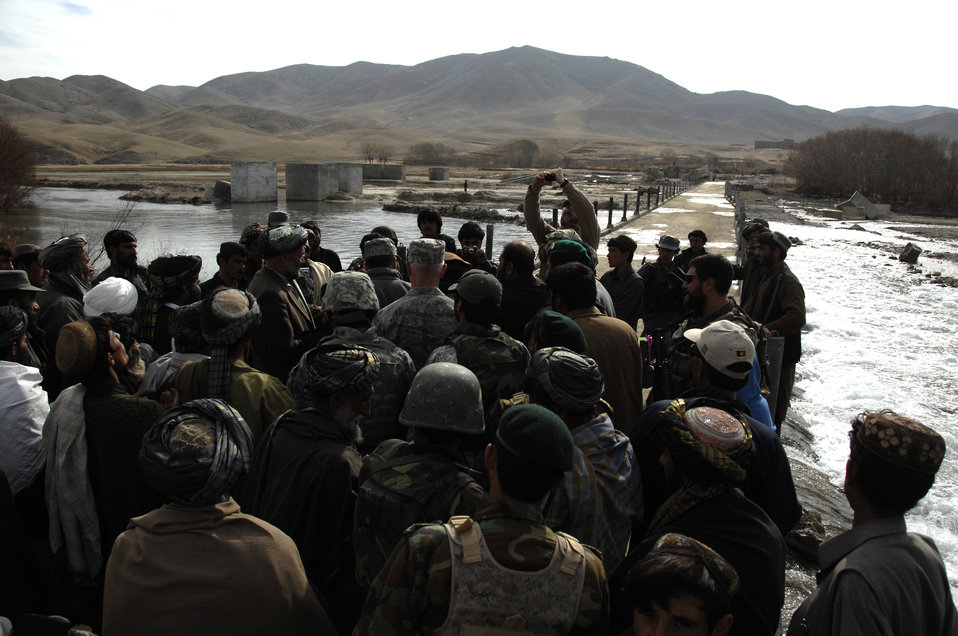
American servicemembers bridge gap between Afghan provinces, relationships

A crowd of U.S. military servicemembers and Afghans gather for the Arghandab Bridge opening ceremony Dec. 26, 2009 at Zabul Province, Afghanistan. The bridge is approximately 200 meters long, four meters wide and has a high load-bearing capacity. The bridge allows easy maintenance for the Afghans.